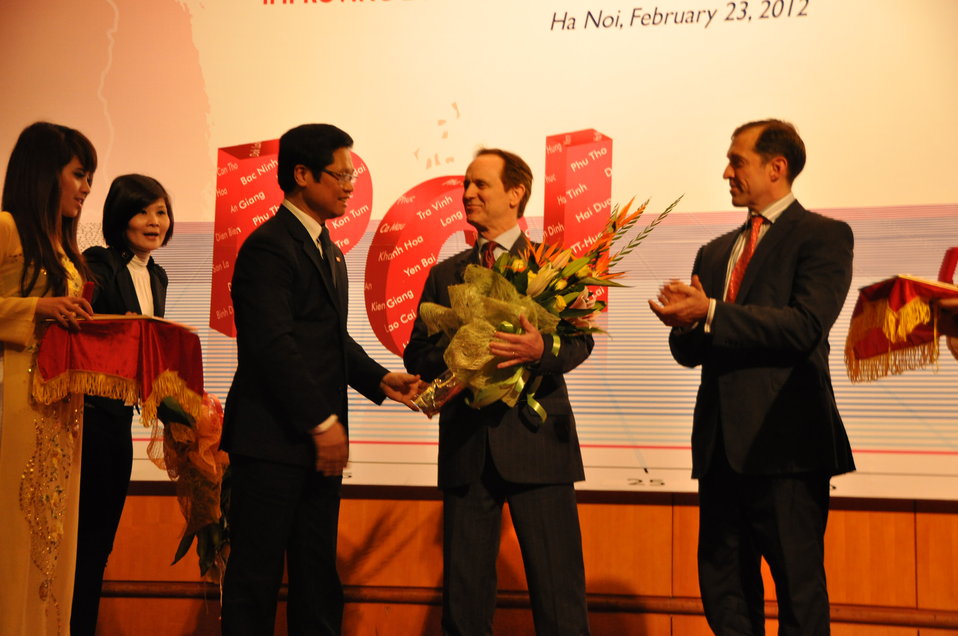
USAID Mission Director Francis Donovan receives award from VCCI Chairman Vu Tien Loc at the Provincial Competitiveness Index 2011 Launch